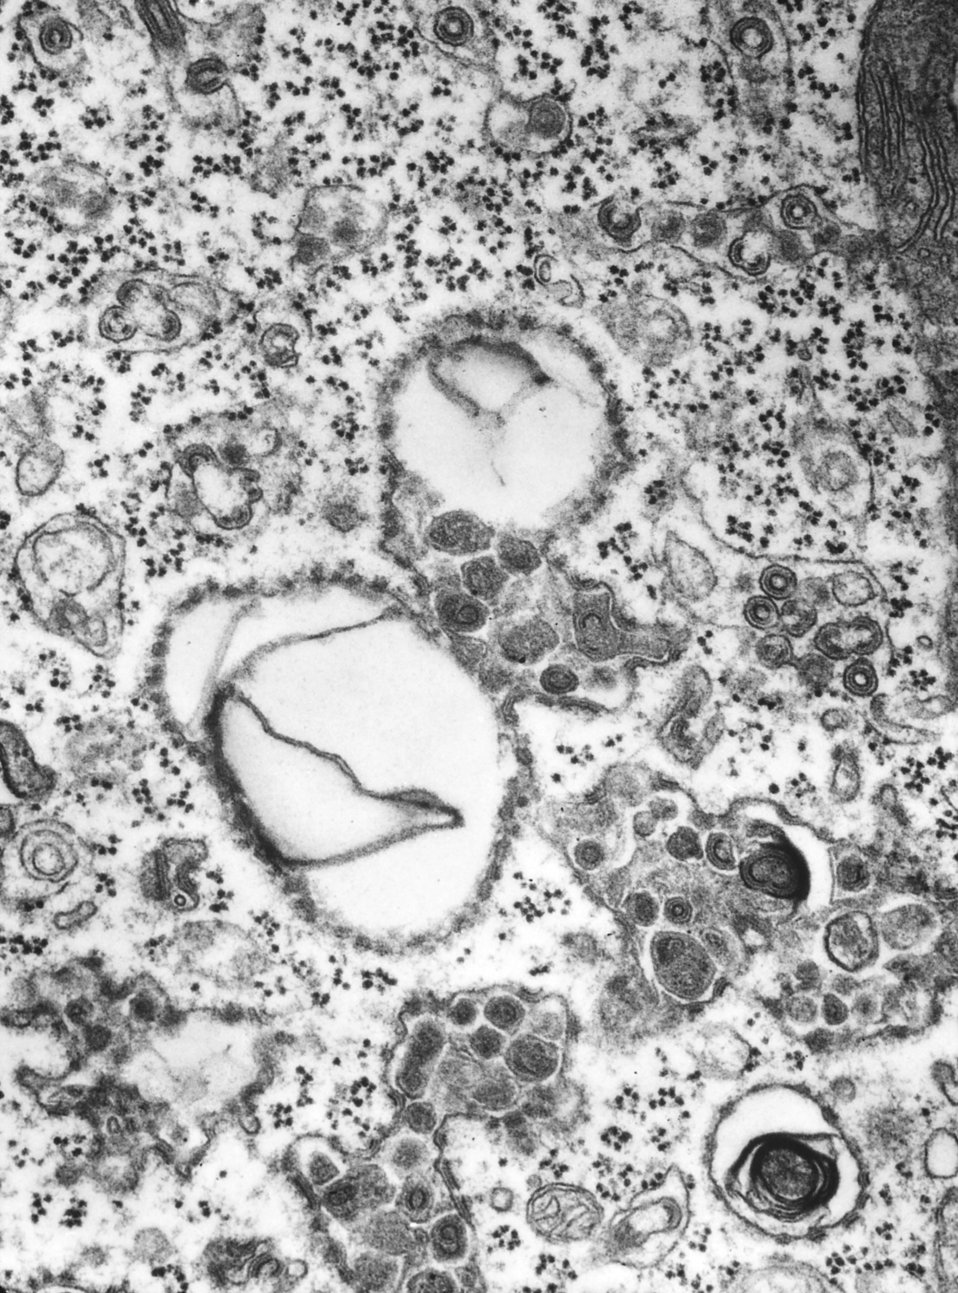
This negatively-stained transmission electron micrograph (TEM) revealed the presence of numerous intracellular Group C RNA tumor virus particles, which were present inside this central nervous system tissue specimen.